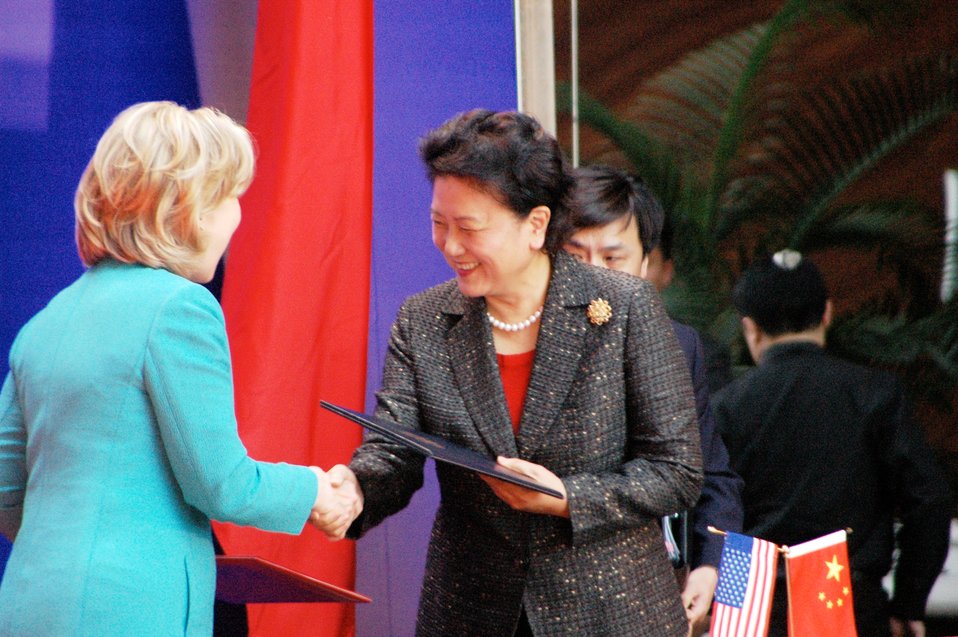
Secretary Clinton and Chinese State Councilor Liu Yandong Shake Hands

U.S. Secretary of State Hillary Rodham Clinton and Chinese State Councilor Liu Yandong shake hands after signing the U.S.-China Consultation on People-to-People Exchange agreement at the National Center for the Performing Arts in Beijing, China, May 25, 2010.